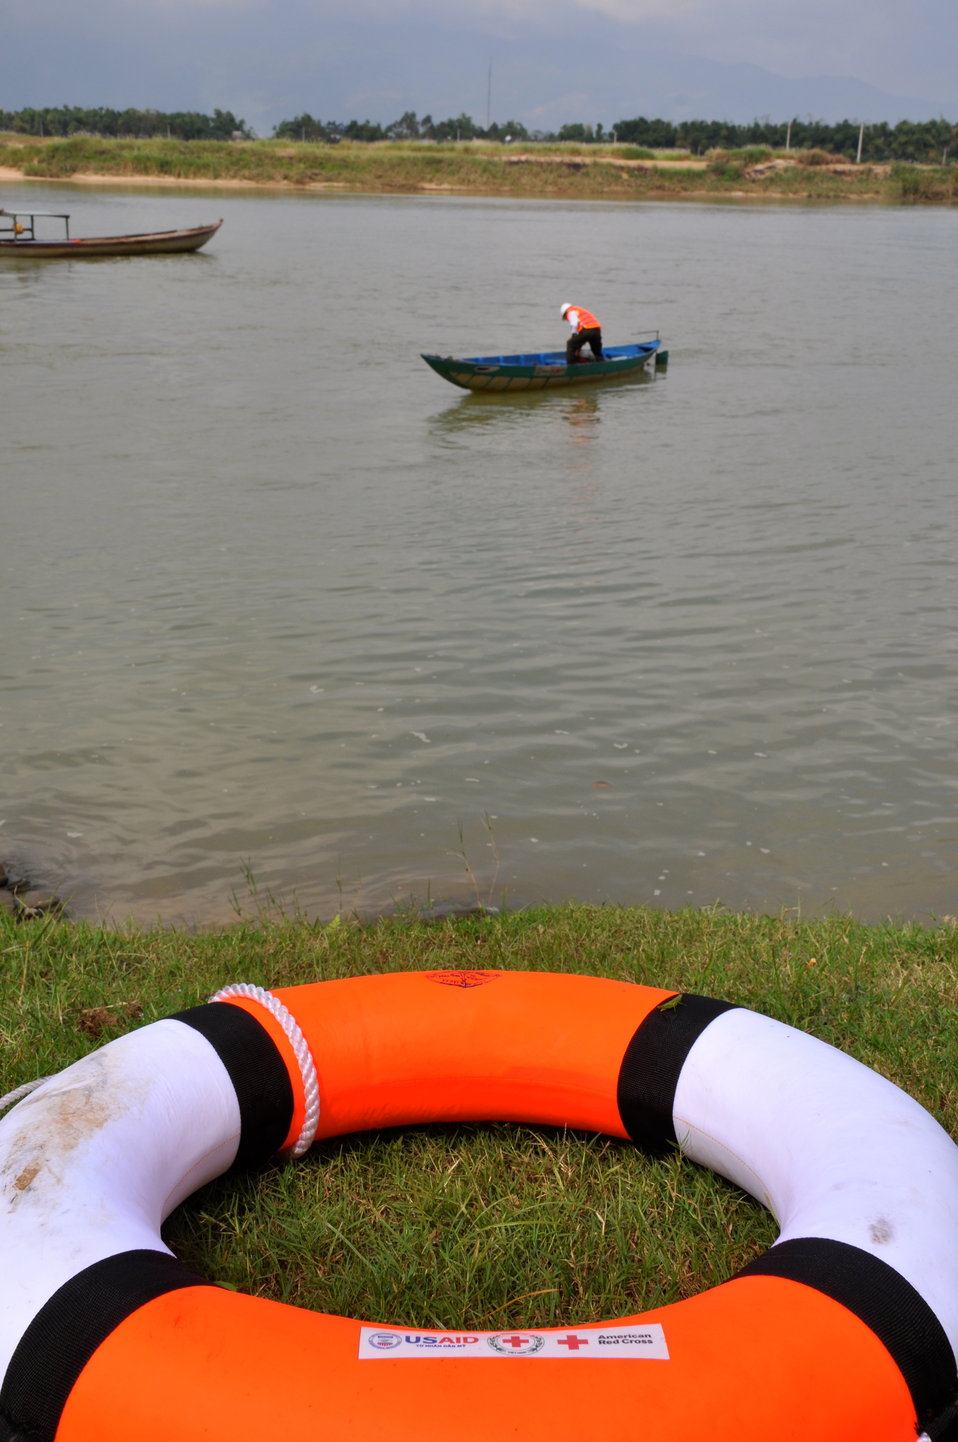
USAID, Red Cross Support Disaster Response Drill in Duy Hoa Commune, Quang Nam Province

Duy Hoa Commune, Quang Nam Province
December 5, 2012